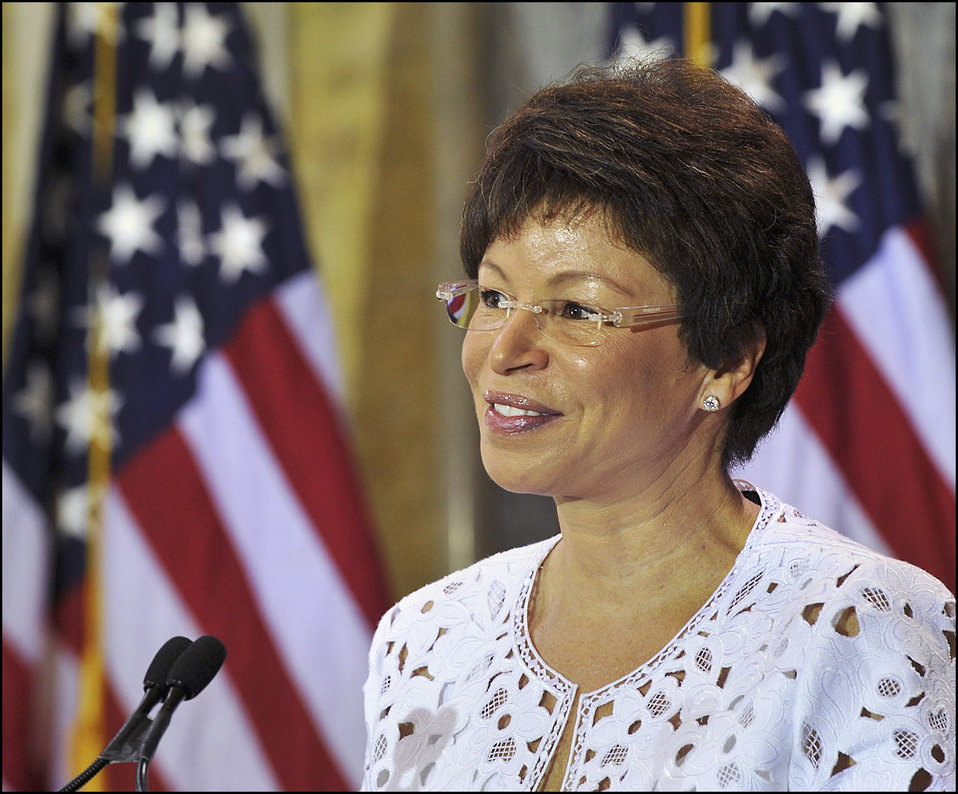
Women in Finance Investment Symposium

Senior Advisor and Assistant to the President Valerie Jarrett welcomed attendees to the second Women in Finance Symposium.